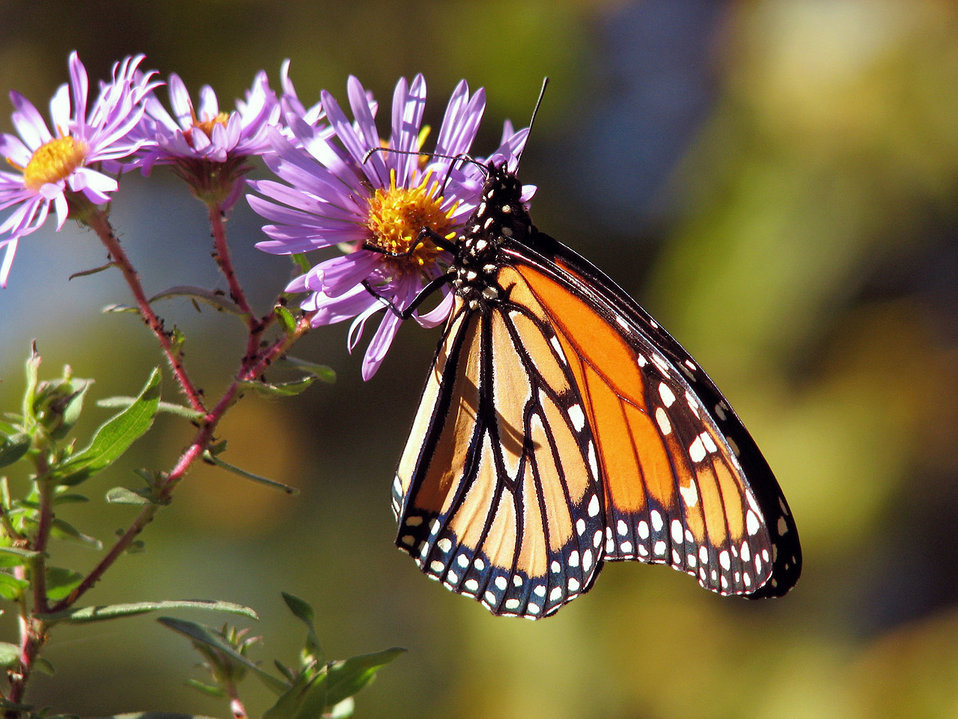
Monarch butterfly on wild asters.